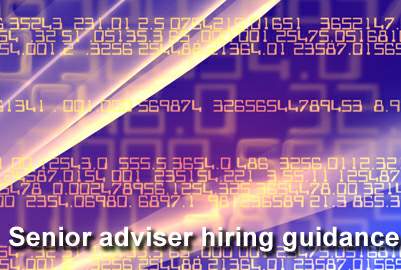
Air Force leaders reinforce senior adviser hiring guidance

Air Force senior leaders recently completed a year-long comprehensive review of the requirements, contracting processes and tasks performed by senior advisers, and While the review did not find any ethical or legal concerns, Air Force Secretary Michael B. Donley and Air Force Chief of Staff Gen. Norton Schwartz want to ensure that Air Force practices are transparent and codified to avoid even the perception of impropriety.